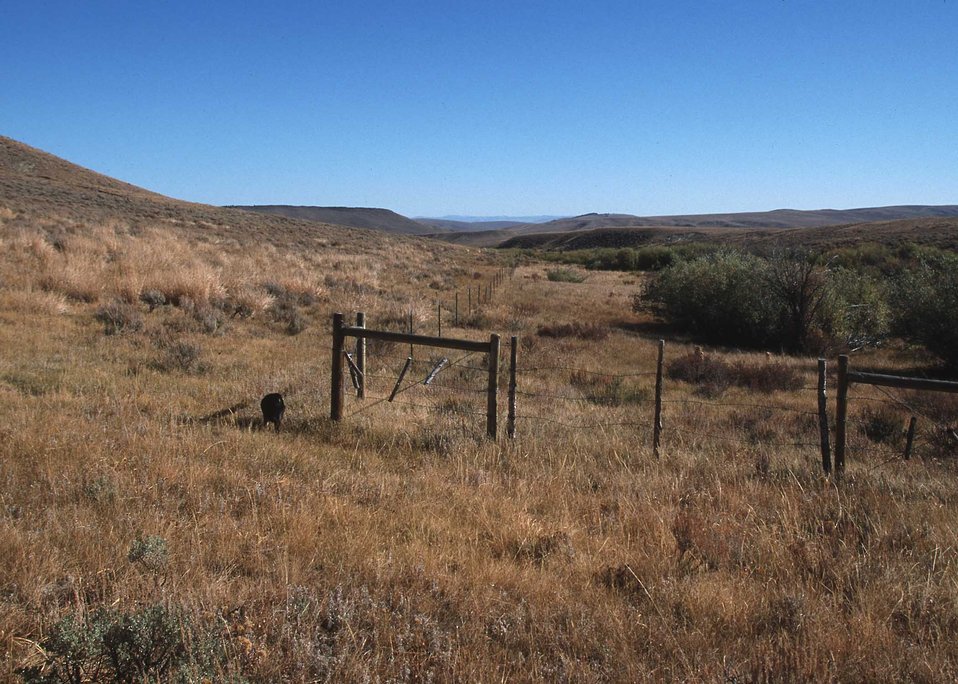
Cross-fencing for a rotational grazing system.